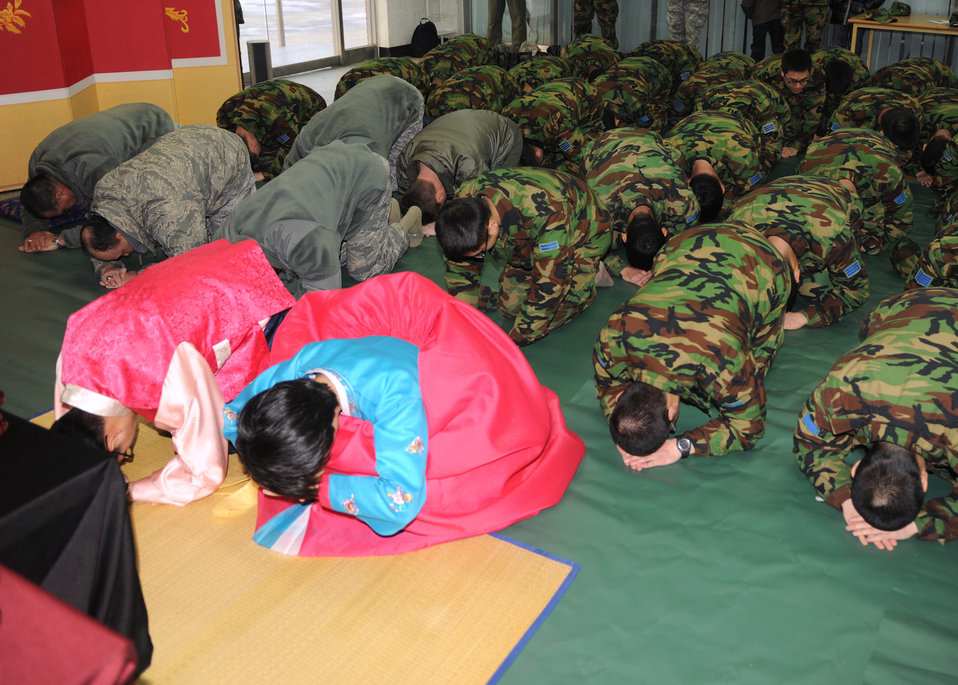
S. Korean Lunar New Year

Members of the 8th Fighter Wing and the South Korean air force's 38th Fighter Group begin a memorial service by bowing during a Lunar New Year ceremony Feb. 3, 2011, in the South Korean air force base exchange. The combined 8th FW and South Korean 38th FG ceremony included a memorial service, ceremonial bowing, a traditional Korean breakfast and traditional games.